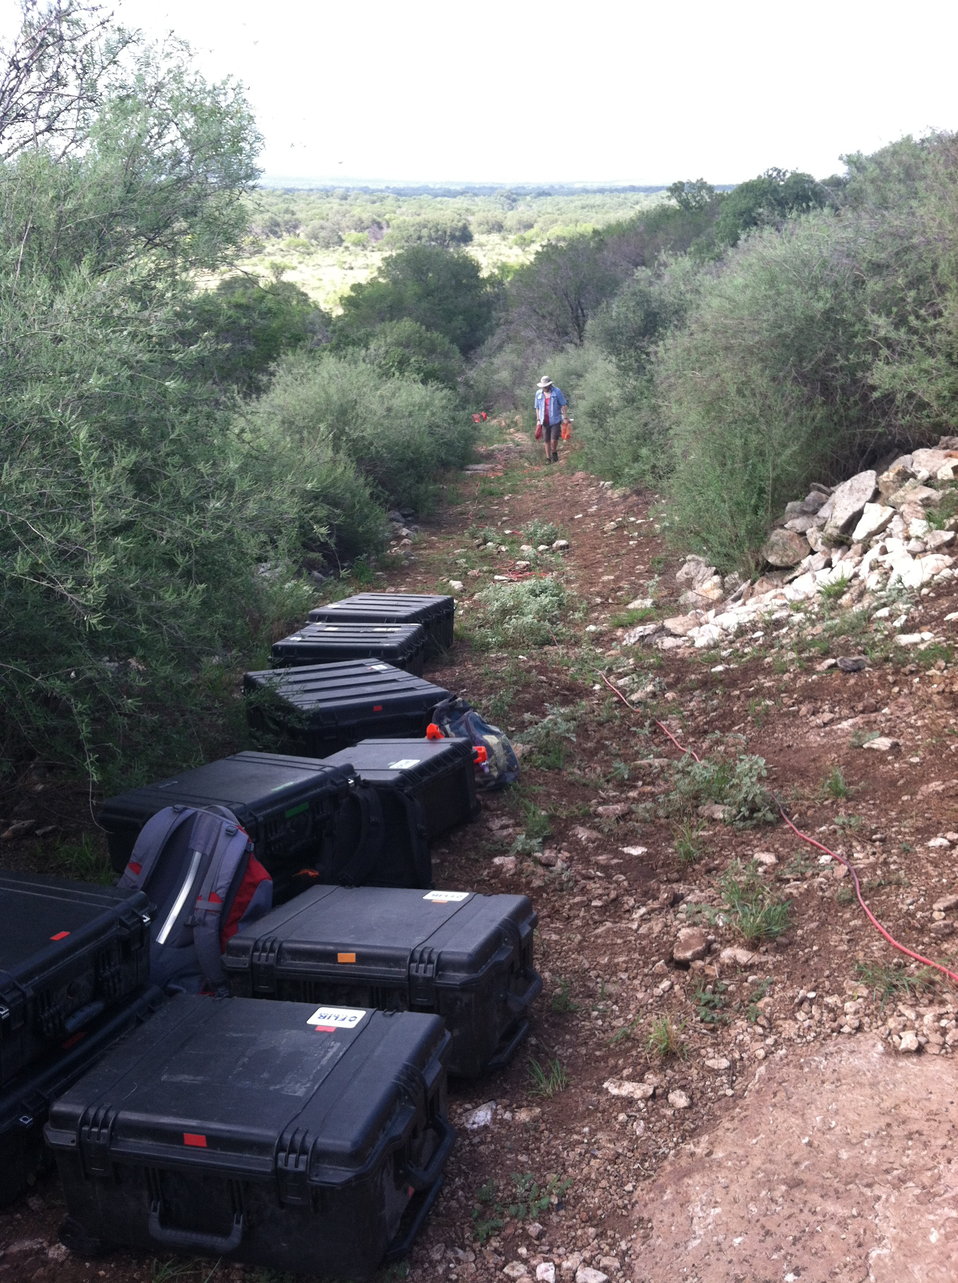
Cases with electronics